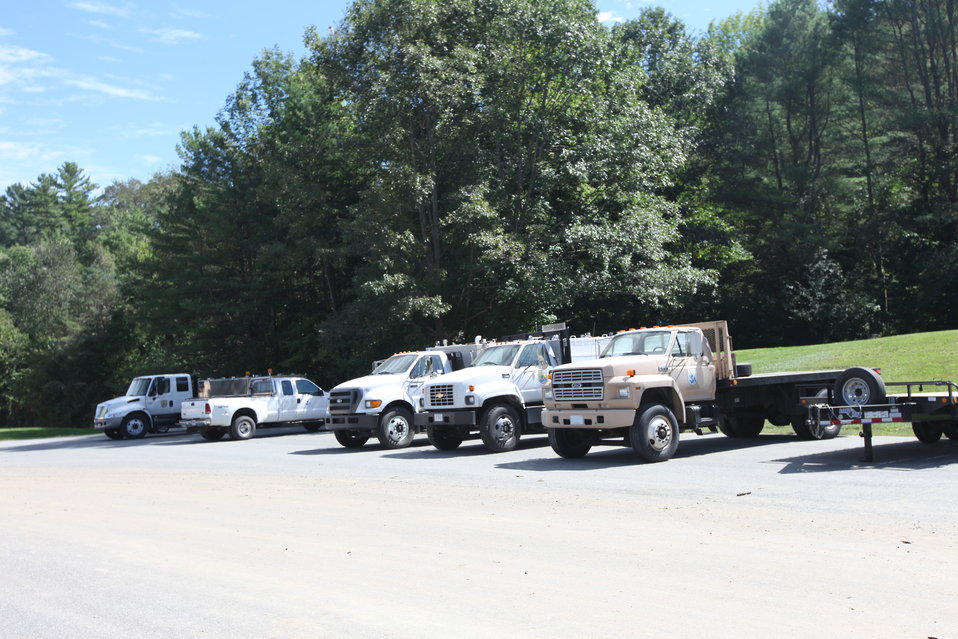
Storm damage relief at White River NFH

Heavy equipment operators came from other USFWS stations to help clean up.